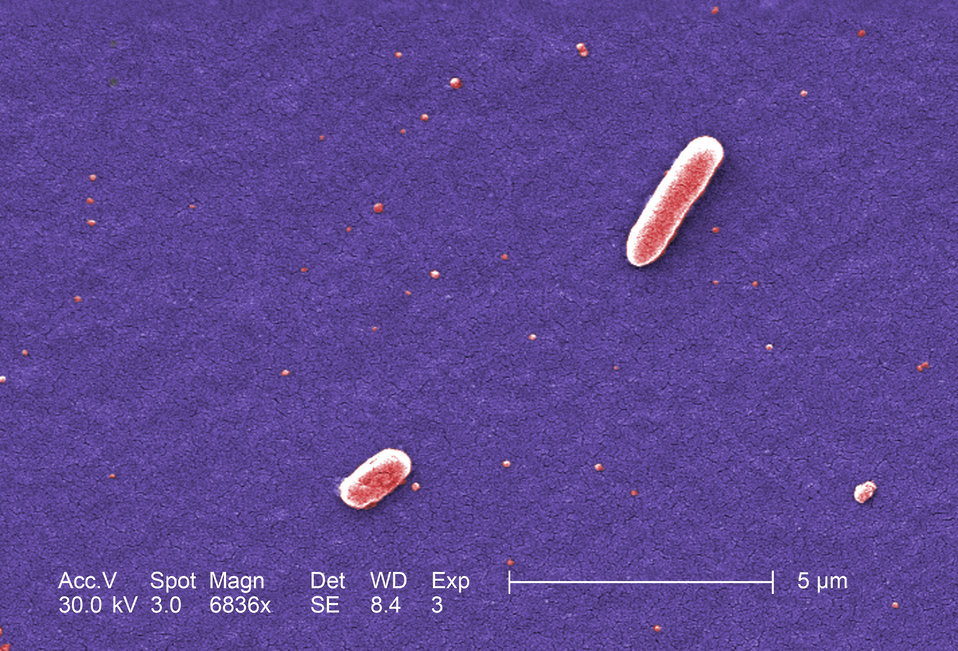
Under a magnification of 6836x, this colorized scanning electron micrograph (SEM) depicted two Gram-negative Escherichia coli bacteria of the strain O157:H7. E. coli O157:H7 is one of hundreds of strains of this bacterium. Although most strains are harmless, and live in the intestines of healthy humans and animals, this strain produces a powerful toxin, which can cause severe illness.E. coli O157:H7 was first recognized as a cause of illness in 1982 during an outbreak of severe bloody diarrhea; the outbreak was traced to contaminated hamburgers. Since then, most infections have come from eating undercooked ground beef.The combination of letters and numbers in the name of the bacterium refers to the specific markers found on its surface, which distinguishes it from other types of E. coli. See PHIL 8799 for a black and white version of this image.